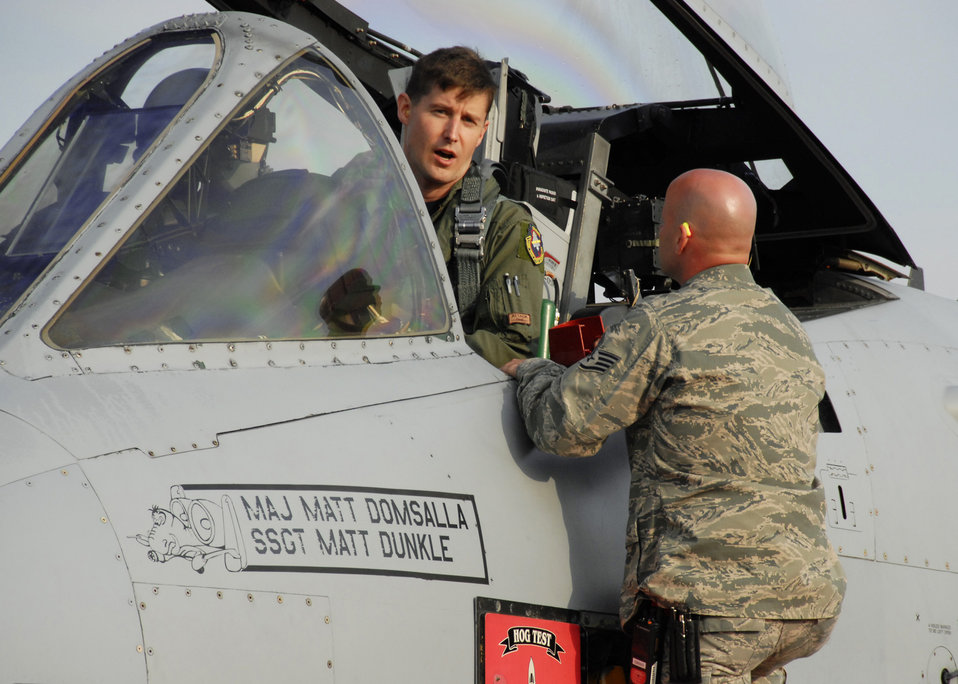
Biofuel flight

Maj. Chris Seager, a test pilot with the 40th Flight Test Squadron at Eglin Air Force Base, Fla., along with his crew chief, Staff Sgt. Rusty Jones, performs a pre-flight check on his A-10C Thunderbolt II March 25, 2010. He was preparing for the first flight of an aircraft powered solely by a biomass-derived jet fuel blend. The A-10 was fueled with a 50/50 blend of Hydrotreated Renewable Jet and JP-8.